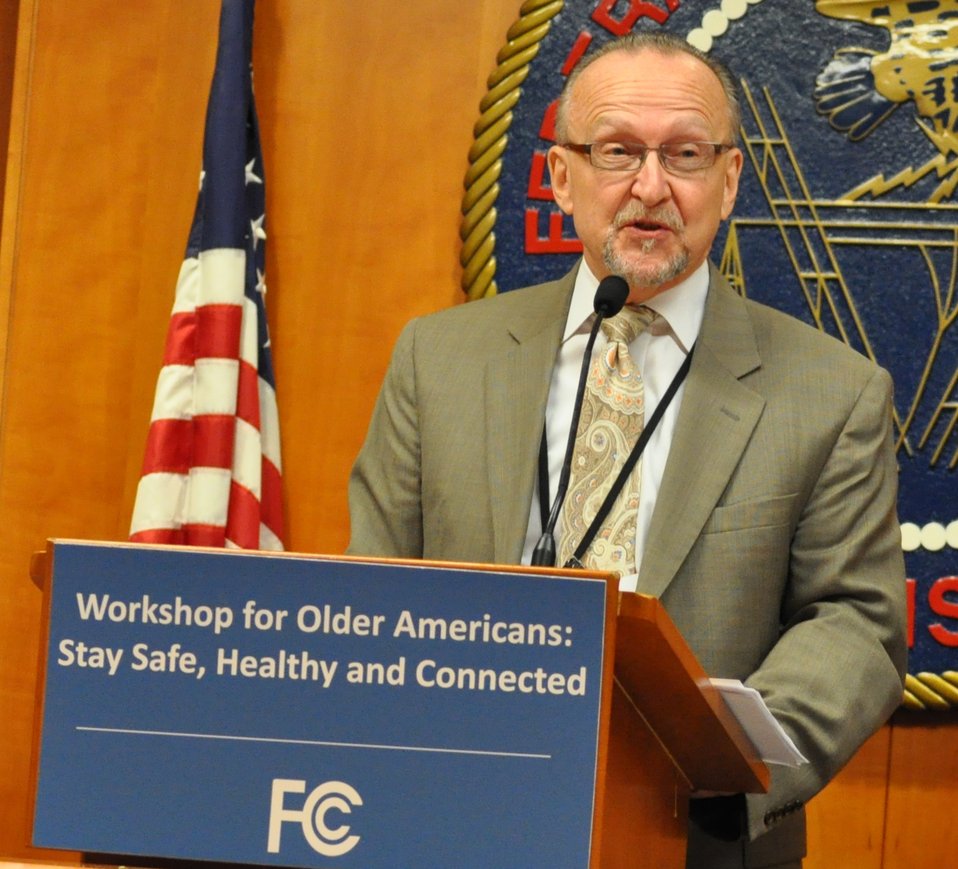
5.22.2014 Workshop for Older Americans: Stay Safe, Healthy and Connected

Everett Sedgwick, Office of Disability Integration and Coordination, Federal Emergency Management Agency (FEMA)